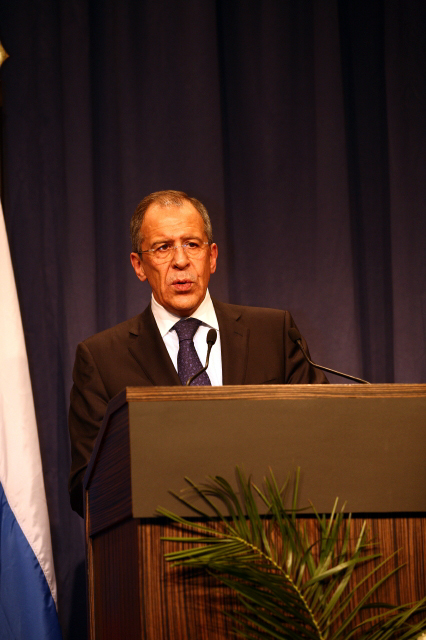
Press Conference With Russian Foreign Minister

Press conference after dinner meeting between U.S. Secretary of State Hillary Rodham Clinton and Russian Foreign Minister Sergey Lavrov in Geneva, Switzerland March 6, 2009.